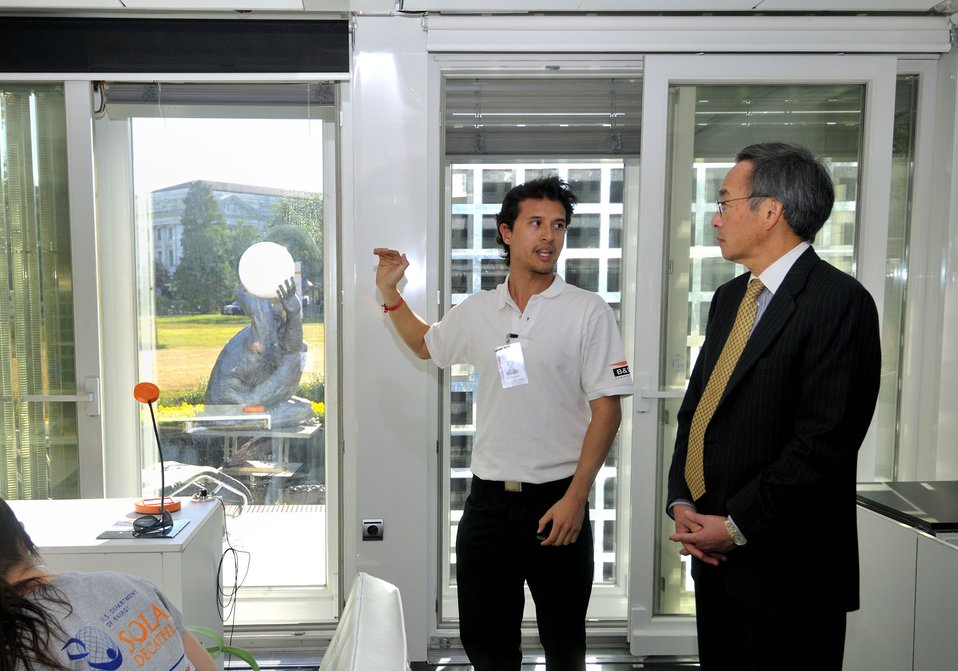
Solar Decathlon 2009 on the National Mall, with Sec. Chu

Solar Decathlon 09